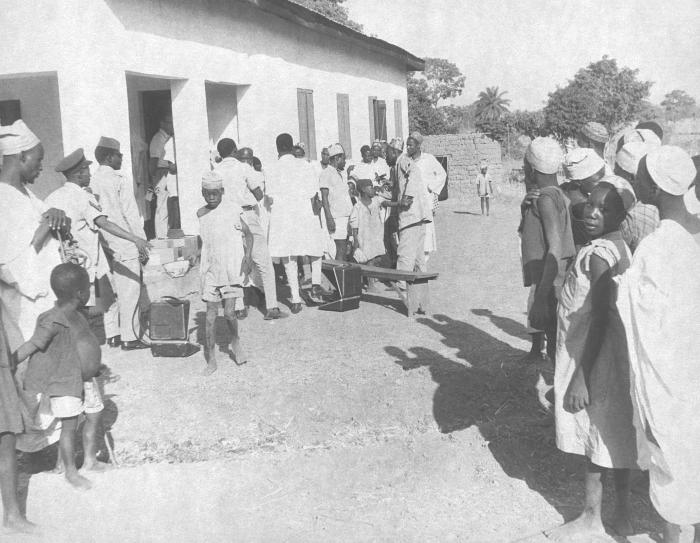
These were participants in Nigeria's 1968 Smallpox Eradication Program about to receive their smallpox vaccinations.